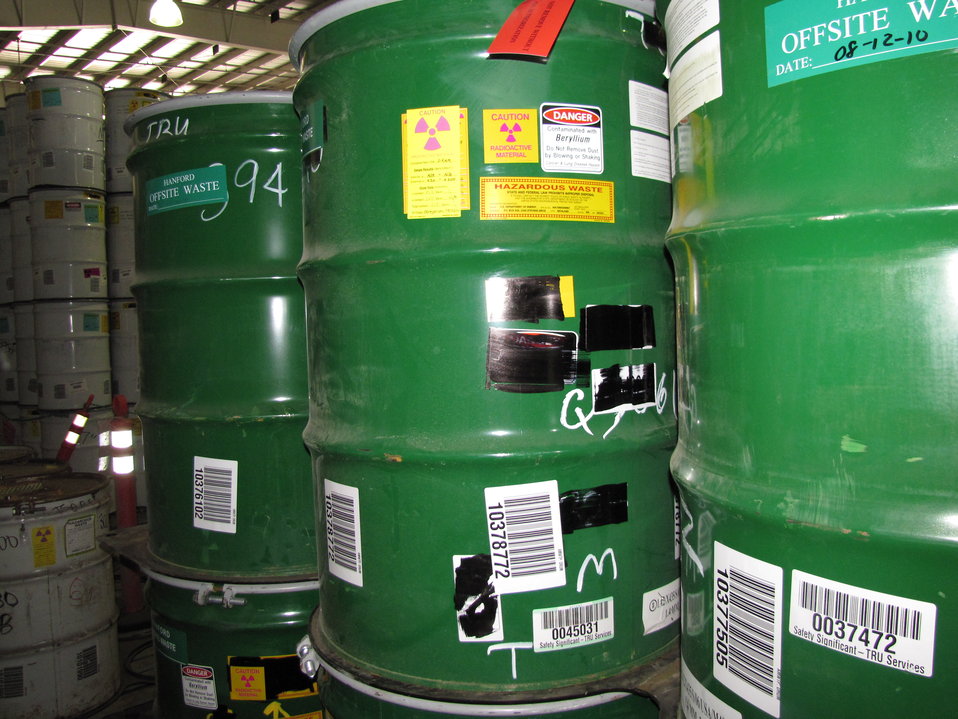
Final Hanford Offsite Waste Shipment Leaves Idaho Treatment Facility

The Advanced Mixed Waste Treatment Project (AMWTP) recently completed the last of 25 shipments of waste bound for permanent disposal in New Mexico and Nevada, six months ahead of a regulatory deadline.
It took 77 shipments to bring the 923, 85-gallon drums of waste from the Hanford Site in Washington to AMWTP. After characterization and compaction operations, the waste left AMWTP in 25 shipments to permanent disposal locations. The transuranic (TRU) waste was shipped to the Waste Isolation Pilot Plant (WIPP) in New Mexico, and two, 100-gallon drums of mixed low-level waste were shipped to the Nevada National Security Site.